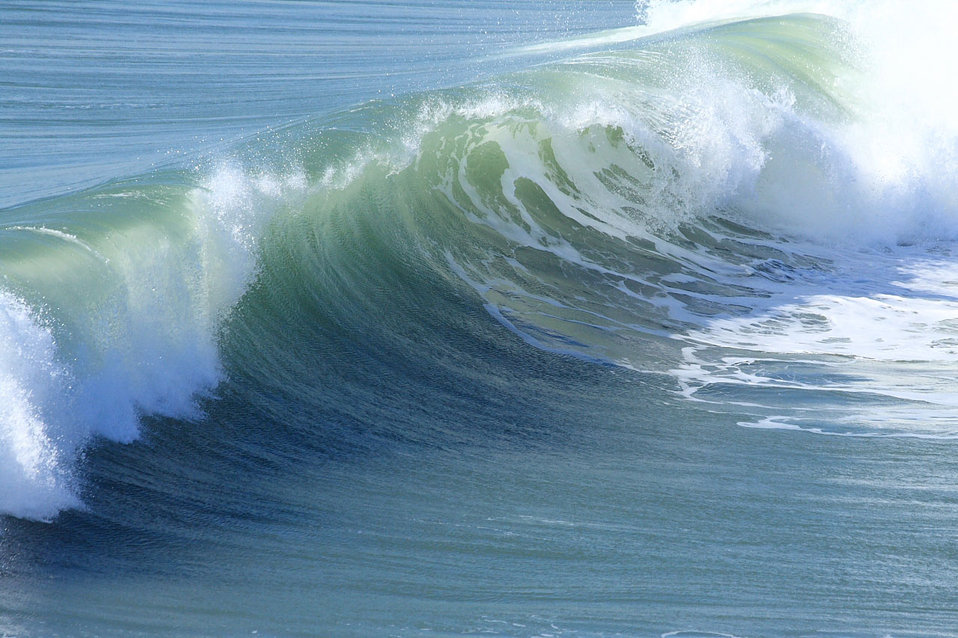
Breaking wave with a nice curl, probably 4-5 feet high, on the north side of huntington beach pier.